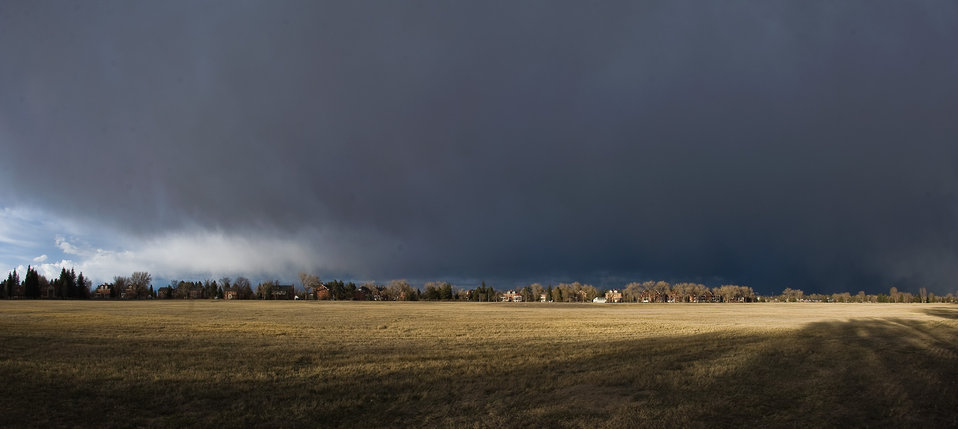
Century old brick homes still strong.

Original base housing is still used after 100 years. The historic homes have had their interiors renovated over the years and are the homes for junior enlisted to commanders at F.E. Warren Air Force Base, Wyoming on April 6, 2010. The storm clouds dropped a light snowfall that evening.